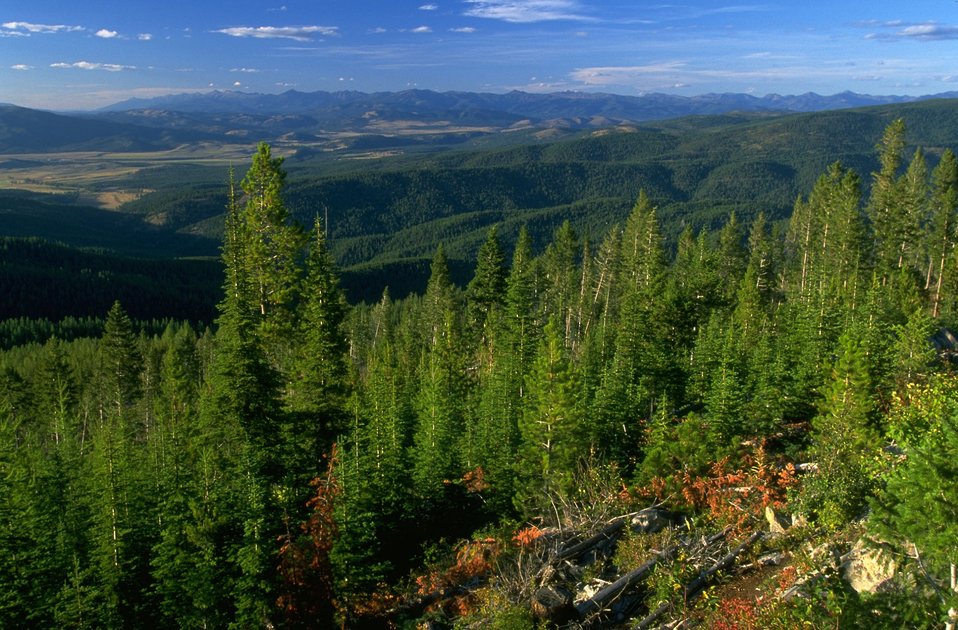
Blackfoot Valley seen from Garnet Back Country Byway